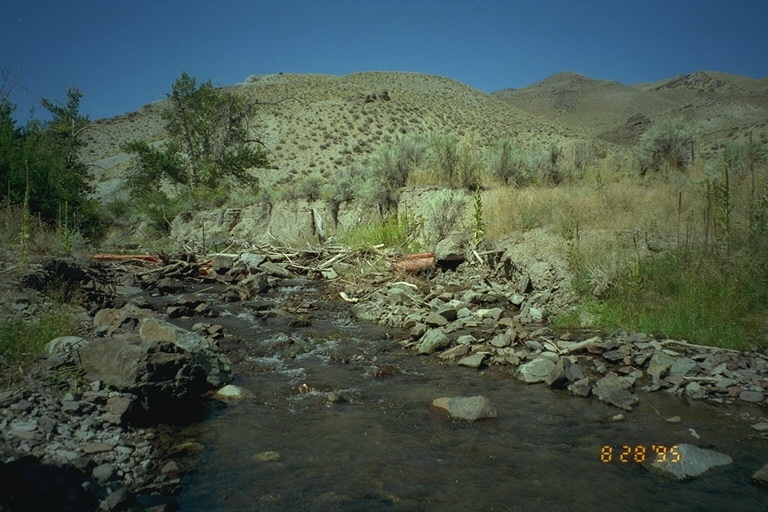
Riparian area Public Lands Salmon Field Office UCSC Upper Columbia Salmon Clearwater District